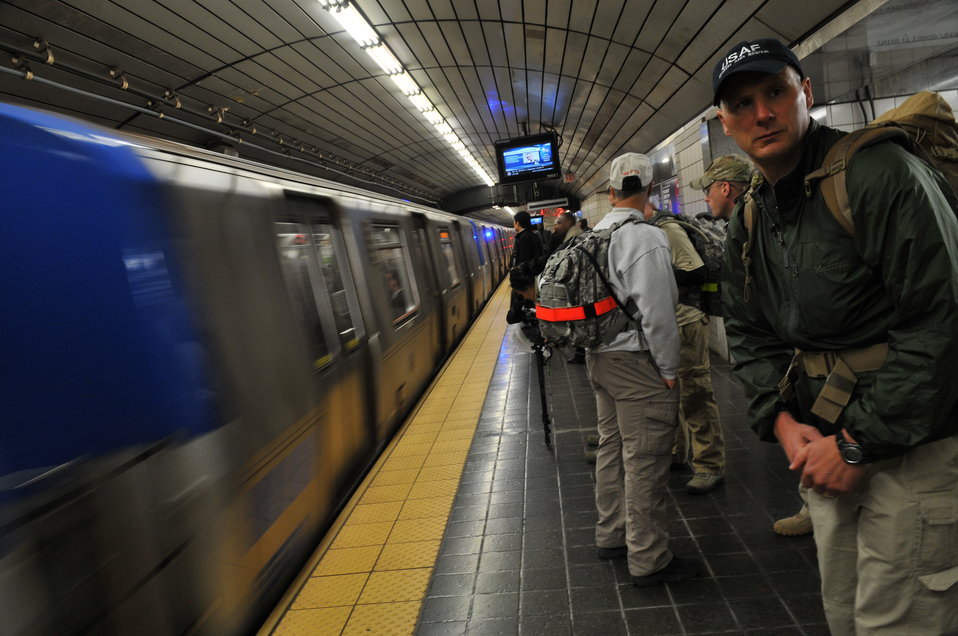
Airmen remember fallen air advisors

Col. Olaf Holm, the Air Advisor Academy commandant, waits to board the subway to transit to the new One World Trade Center in New York City on April 26, 2012. The One World Trade Center was the starting point of the Air Advisor Memorial Ruck March, a relay that spanned approximatley 90 miles from the in-construction structure to Joint Base McGuire-Dix-Lakhurst, N.J. The march, which took approximately 30 hours to complete, was in honor of the nine air advisors who were killed April 27, 2011, in Kabul, Afghanistan.